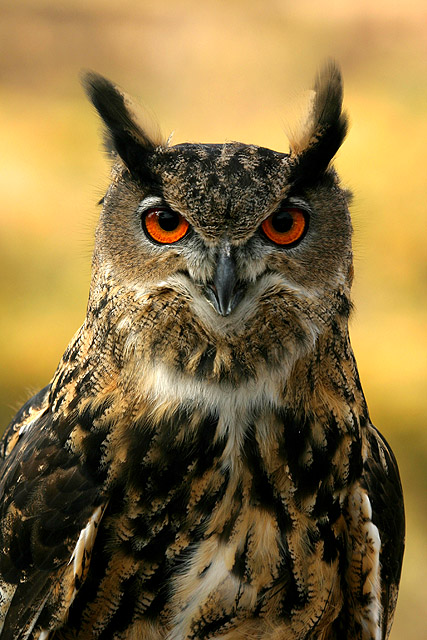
Uploaded by request of Jim Sapp

Taken in Colorado.

The bird is an eurasian eagle owl.